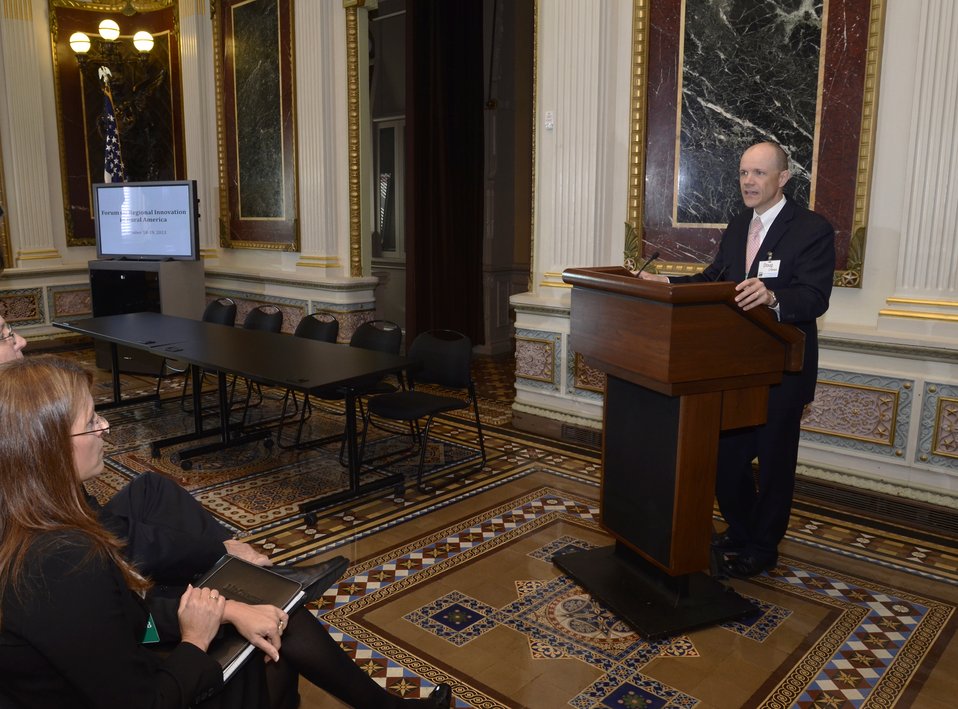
U.S. Department of Agriculture (USDA) Under Secretary Rural Development (RD) Doug O’Brien speaks at the 2nd Annual meeting of the White House Rural Forum concerning Regional Innovation in Rural America at the Executive Office Building in Washington, D.C. on Wednesday, Sep. 18, 2013.